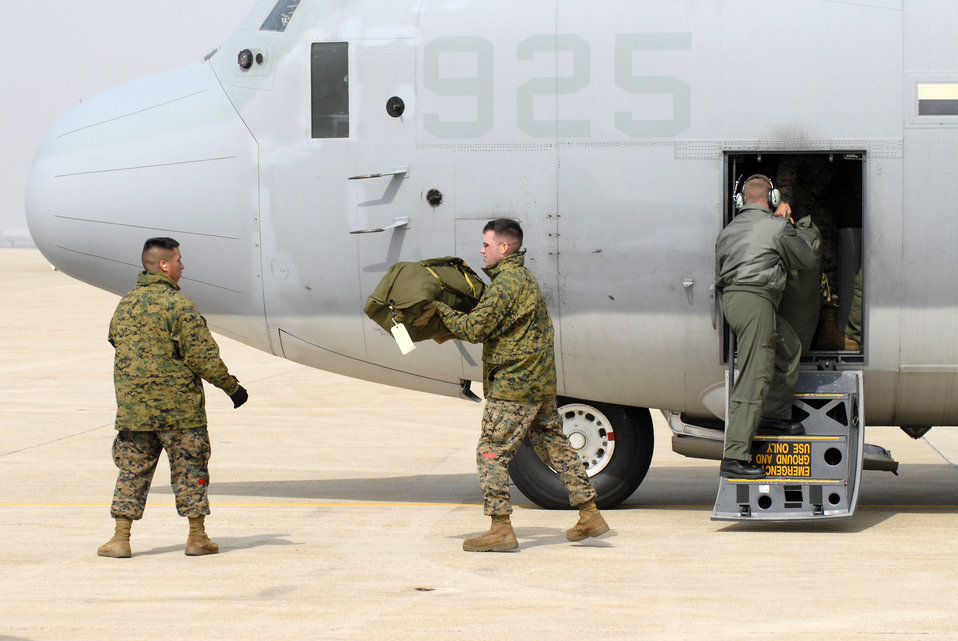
Marines arrive in Kunsan for exercise

Marines from the 1st Marine Aircraft Wing, Marine Air Station Futenma from Japan offload luggage from a KC-130J Super Hercules Feb. 23 at Kunsan Air Base, South Korea. The Marines will support Exercise Key Resolve.